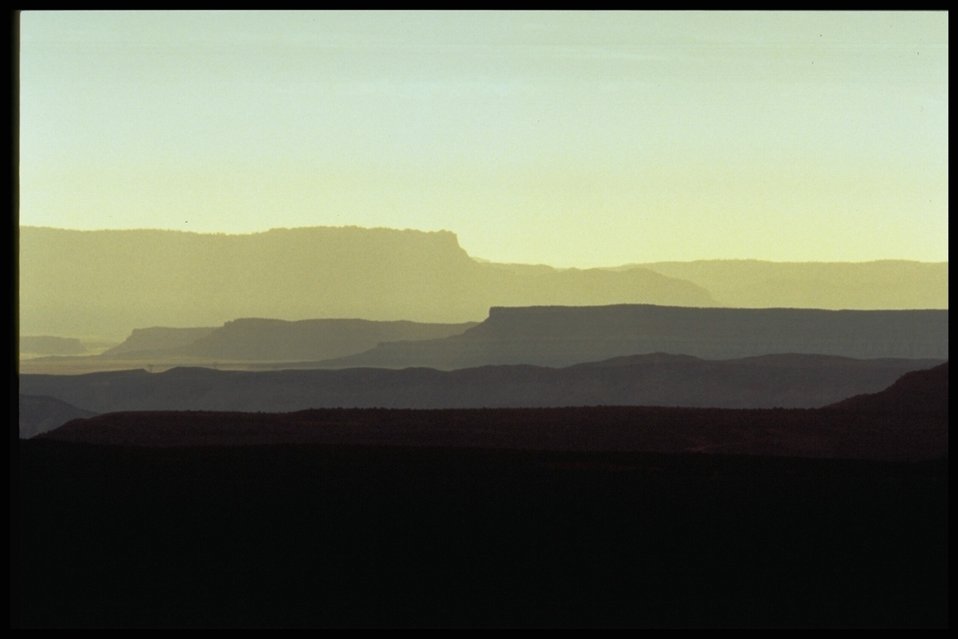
A beautiful view of a sunset at the Parashant National Monument.